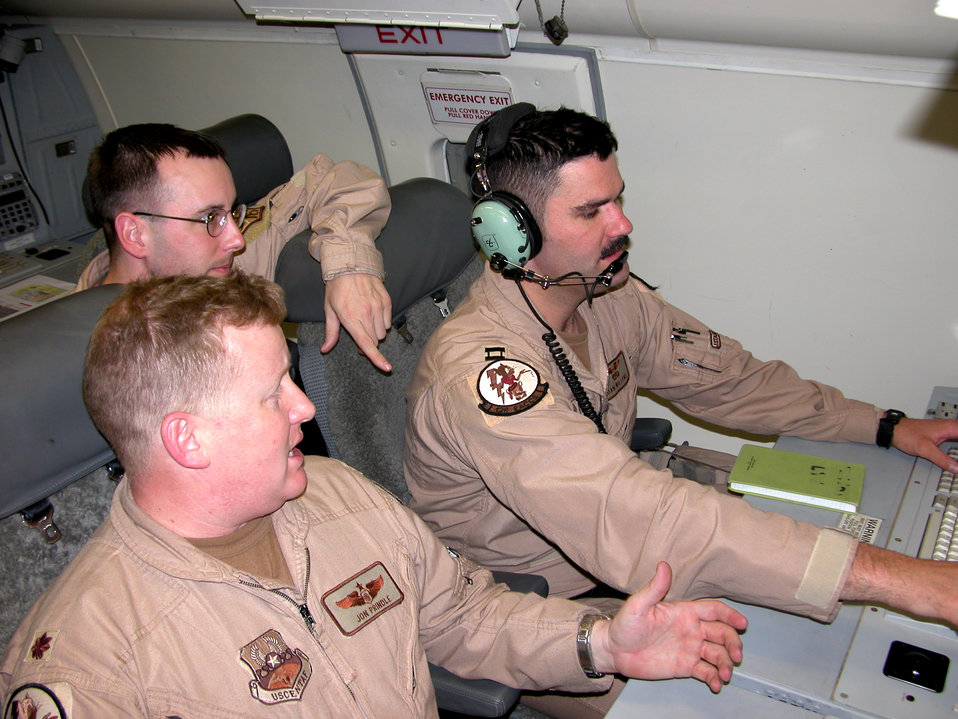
Joint STARS aircrew provide top cover for coalition forces

Army Staff Sgt. Tim Harris (center) reviews an E-8C Joint Surveillance Target Attack Radar System aircraft, or JSTARS, track with fellow aircrew members Maj. Jon Pindle (left) and Capt. Dan Willems during a recent mission. The Air Force and Army aircrew team provide a comprehensive look at the ground picture of radar targets in Iraq, and report the information to multiple locations throughout the theater ensuring the best possible radar top cover for coalition forces in Operation Iraqi Freedom. The team is part of the 128th Expeditionary Airborne Command and Control Squadron Airborne Target Surveillance.